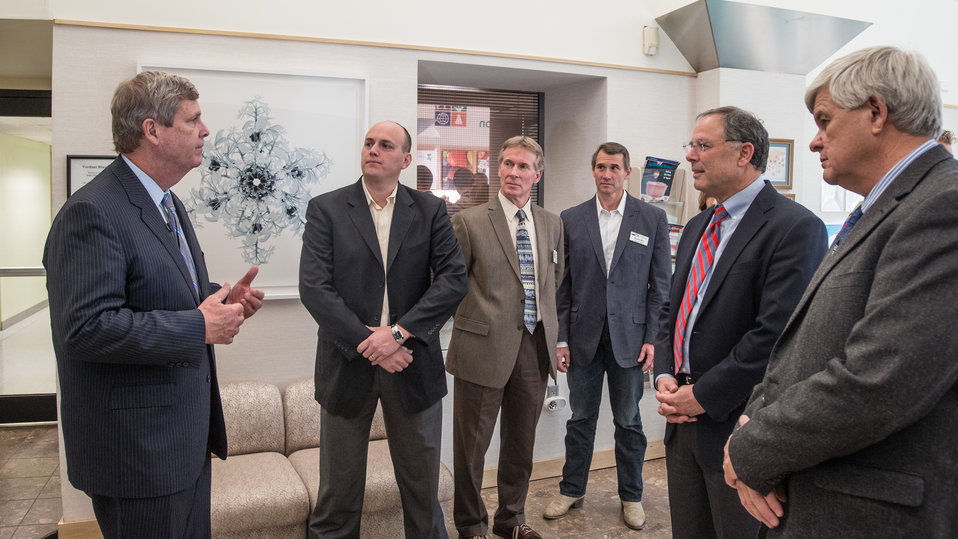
Agriculture Secretary Tom Vilsack, left, chats with, as seen second from left-right, Cool Planet Energy Systems Strategic Partnerships Director Wes Bolsen, Natural Resources Conservation Service (NRCS), Greeley, CO Area Conservationist, Dr. Roy Hall, Farm Service Agency (FSA), Executive Officer Dr. David Nix, Colorado State University (CSU) Dean of Agricultural Sciences, Dr. Craig Beyrouty Agriculture Research Service (ARS) Northern Plains Area Director and Dr. Larry Chandler, prior to Secretary Vilsack meeting with employees and staff of the NCGRP to see first-hand the importance of agricultural research accomplished by ARS scientists and academic researchers funded by the National Institute of Food and Agriculture; and how the Food, Farm and Jobs Bill can continue adequate investments in agricultural research at NCGRP. The Secretary will also announce a $9.8 million grant to a consortium of academic, industry and government organizations in Ft. Collins, CO, on Wednesday, Nov. 6, 2013.